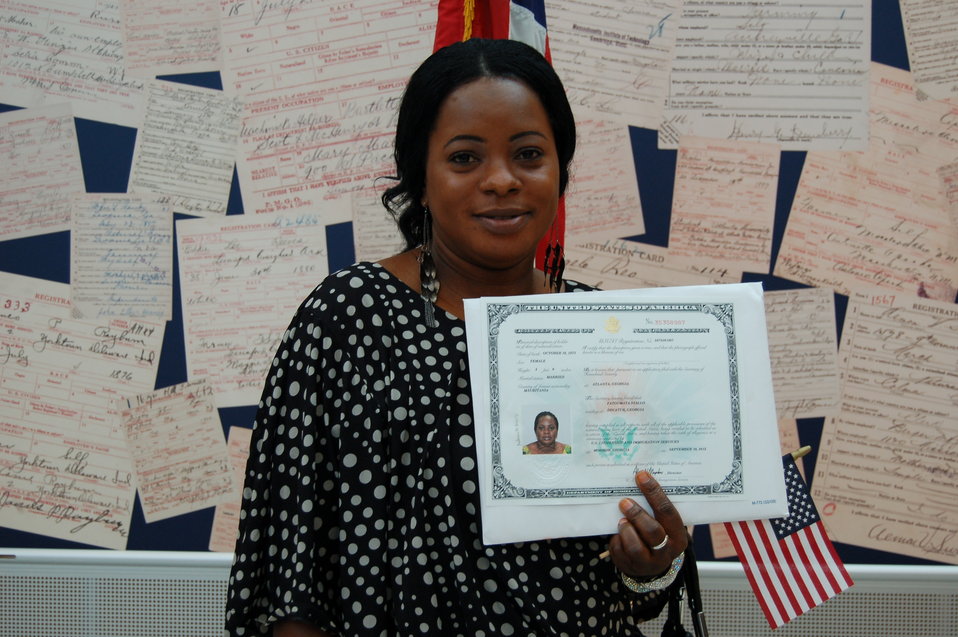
New Citizens